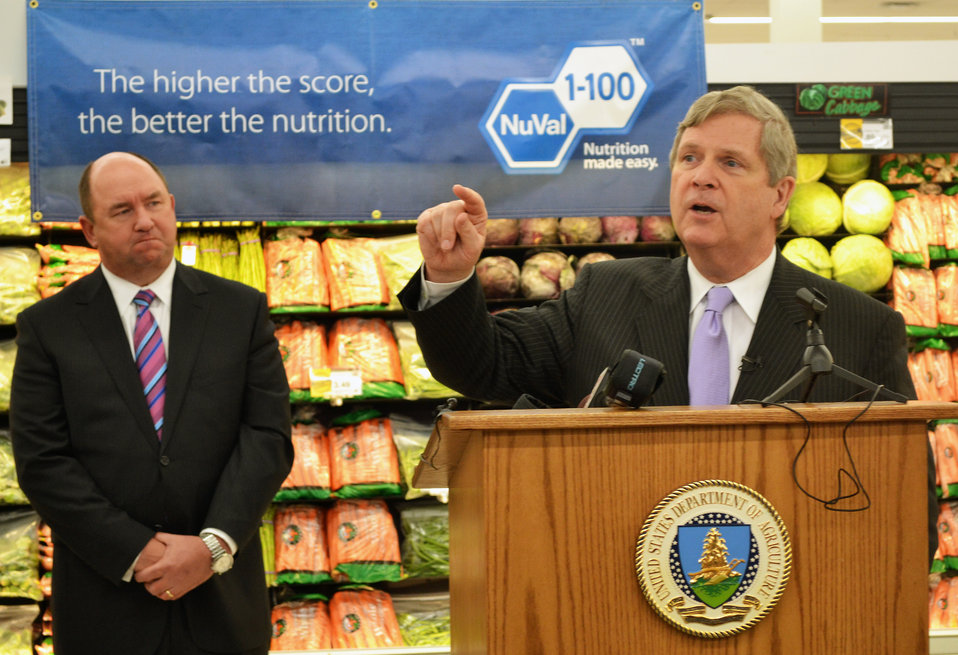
Agriculture Secretary Tom Vilsack visited a Hy-Vee grocery store in Sioux Falls, South Dakota to discuss USDA efforts to promote fruit and vegetable consumption, improve childhood nutrition and prevent obesity to raise a healthier generation of Americans. He announced the results of a pilot program aimed at increasing fruit and vegetable consumption in America’s poorest schools.